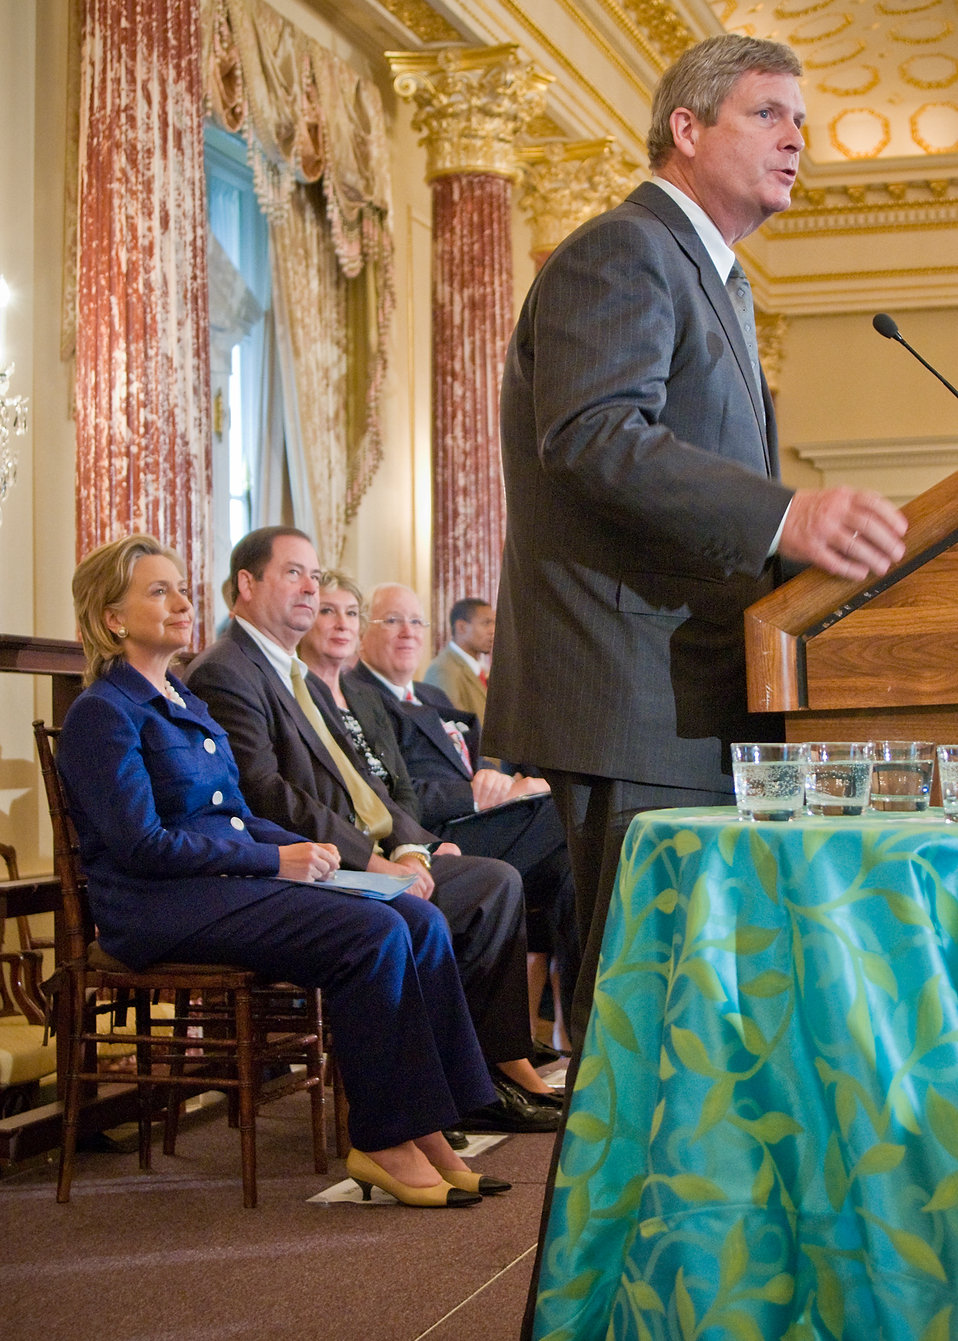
Agriculture Secretary Tom Vilsack speaks of the Obama Administration’s efforts to end world hunger during the announcement of the 2010 World Food Prize co-winners Reverend David Beckmann, President of Bread for the World and Jo Luck, Heifer International in the Benjamin Franklin Room at the U.S. State Department in Washington, DC, on Wednesday, June 16, 2010. From left behind Secretary Vilsack are: Secretary of State Hillary Clinton, World Food Prize Chairman John Ruan III, Mrs. Janis Ruan and World Food Prize President Ambassador Kenneth Quinn. USDA Photo 10di1403-038.